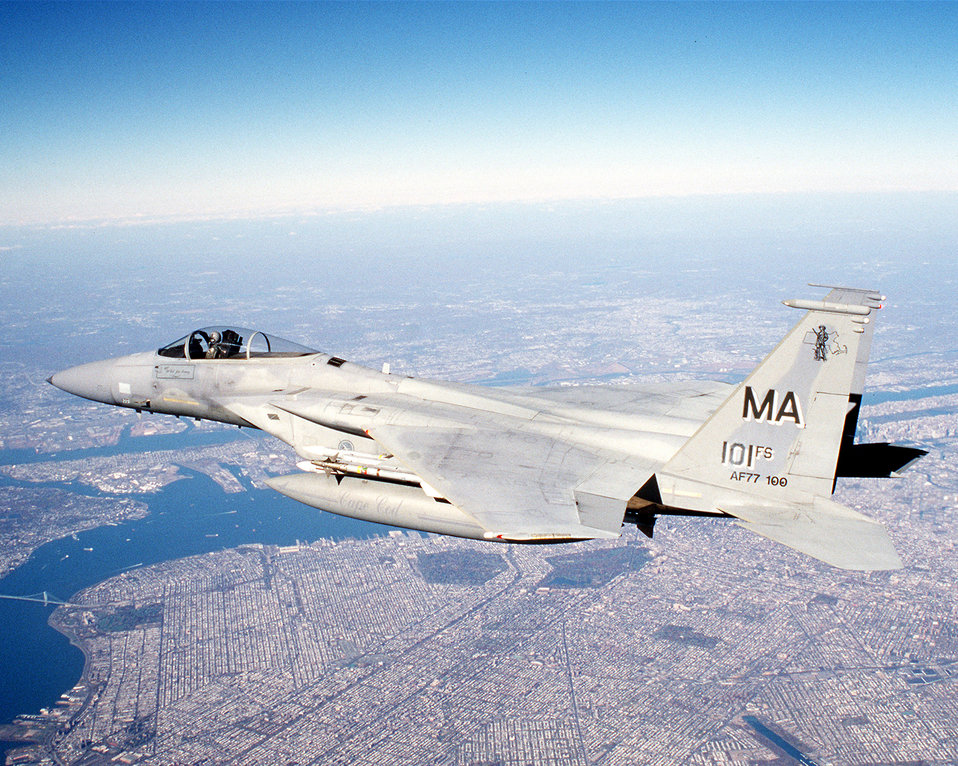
Noble Eagle

OPERATION NOBLE EAGLE -- An F-15 Eagle from the Massachusetts Air National Guard’s 102nd Fighter Wing flies a combat air patrol mission over New York City in support of Operation Noble Eagle. More than 30,000 people in the ANG and Air Force Reserve have been called to active duty to support Operations Noble Eagle and Enduring Freedom.